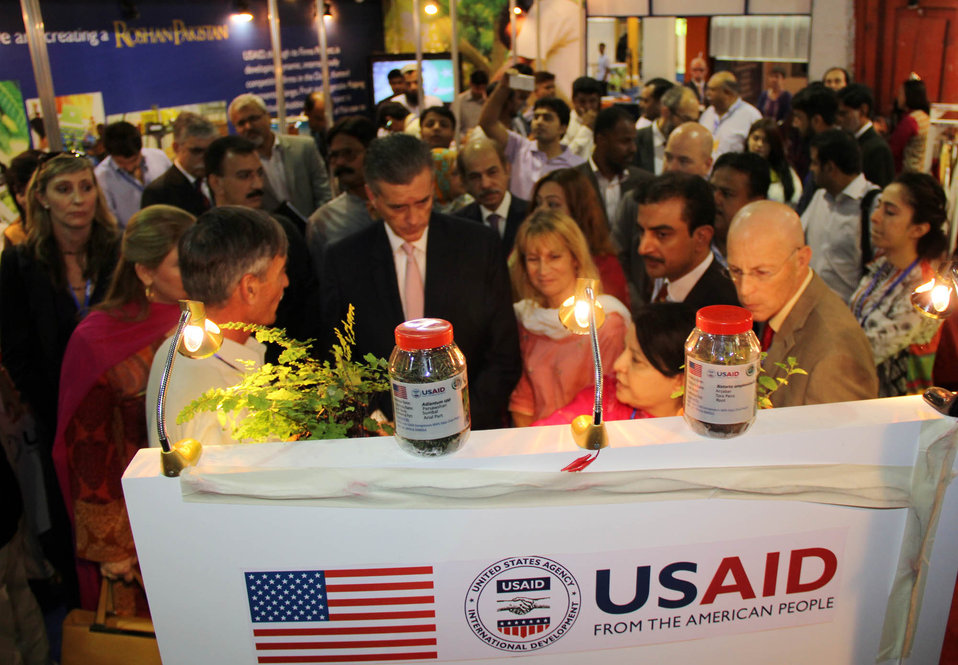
Ms. Susan Slomback, Chief of Party USAID's Entrepreneurs Project, briefing Mr. Richard G. Olson, US Ambassador, about the Medicinal and Aromatic Plants Value Chain